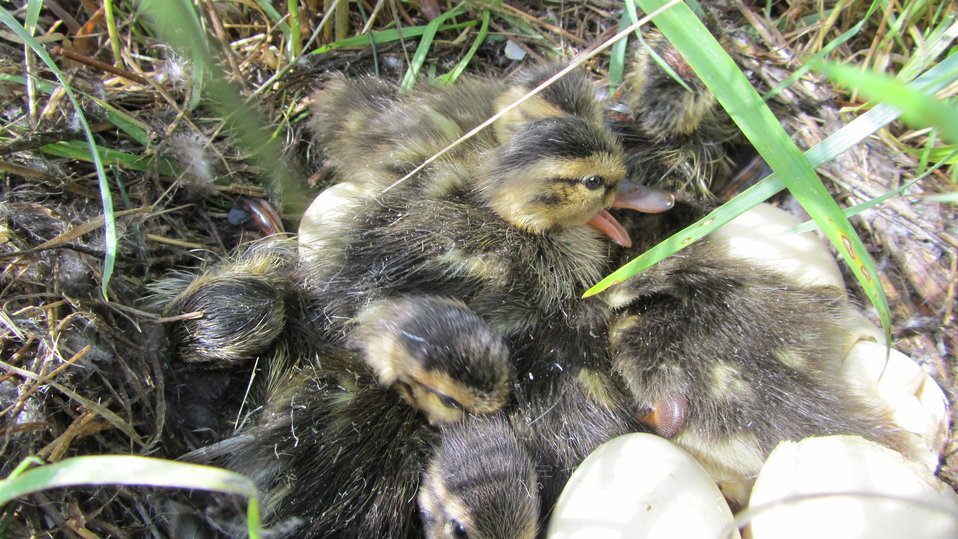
Northern Shoveler Ducklings

The lands of the refuge were established to protect and provide habitat for migratory birds that cross State lines and international borders and are by law a Federal trust responsibility.
The refuge is of great value to waterfowl and shorebirds, as well as other migrating water-dependent bird species, because of the diversity of wetland and upland habitats that provide for the diverse life cycle needs of these species.